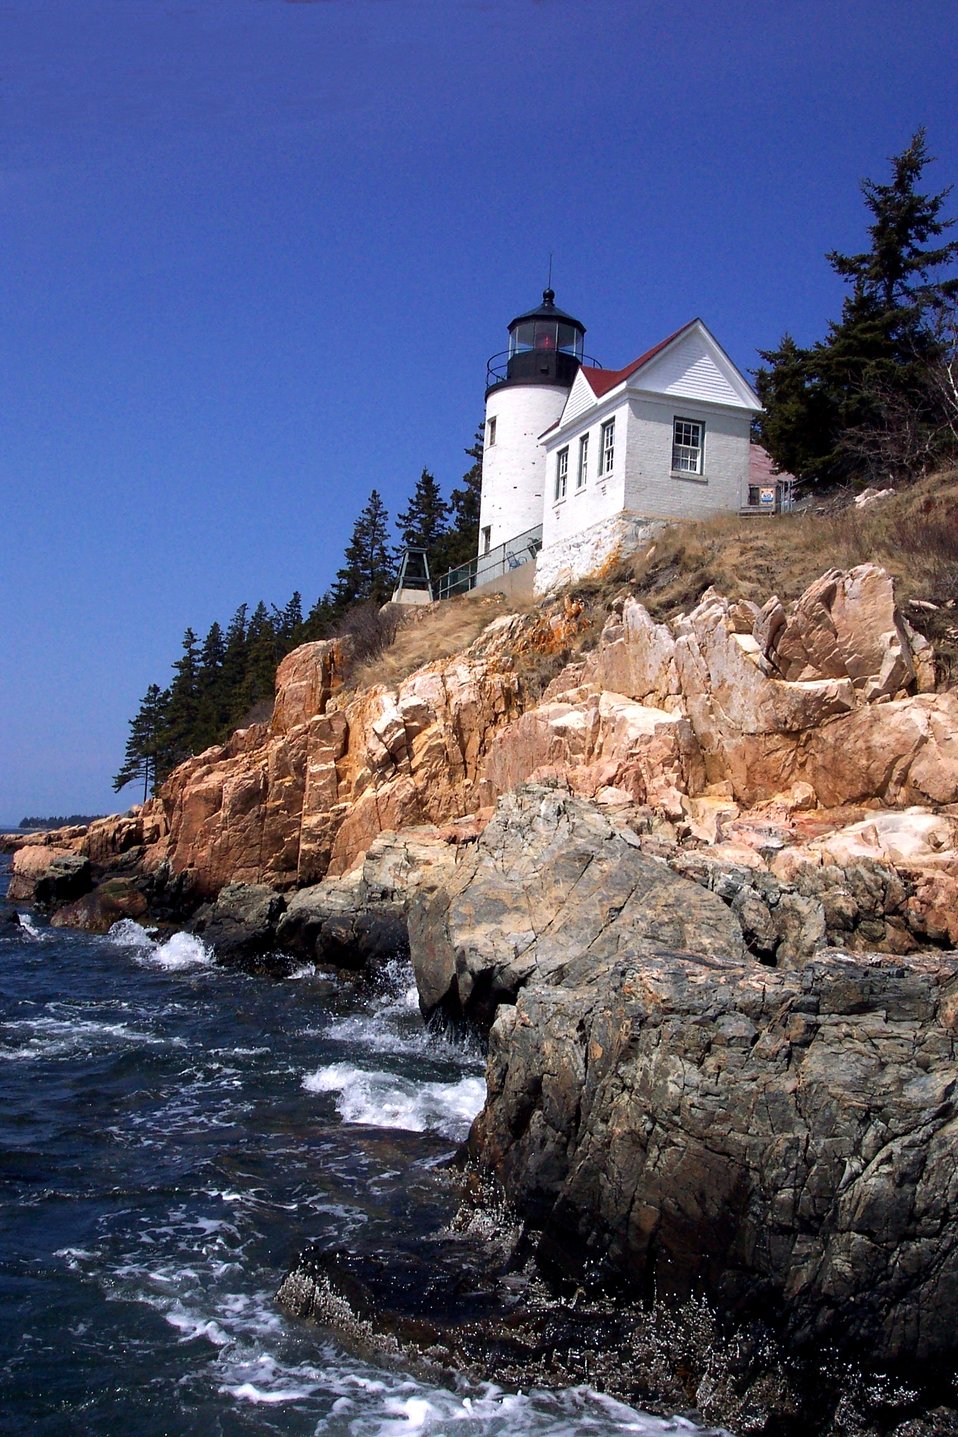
Bass Harbor Head Lighthouse from below and looking east at the shoreline.